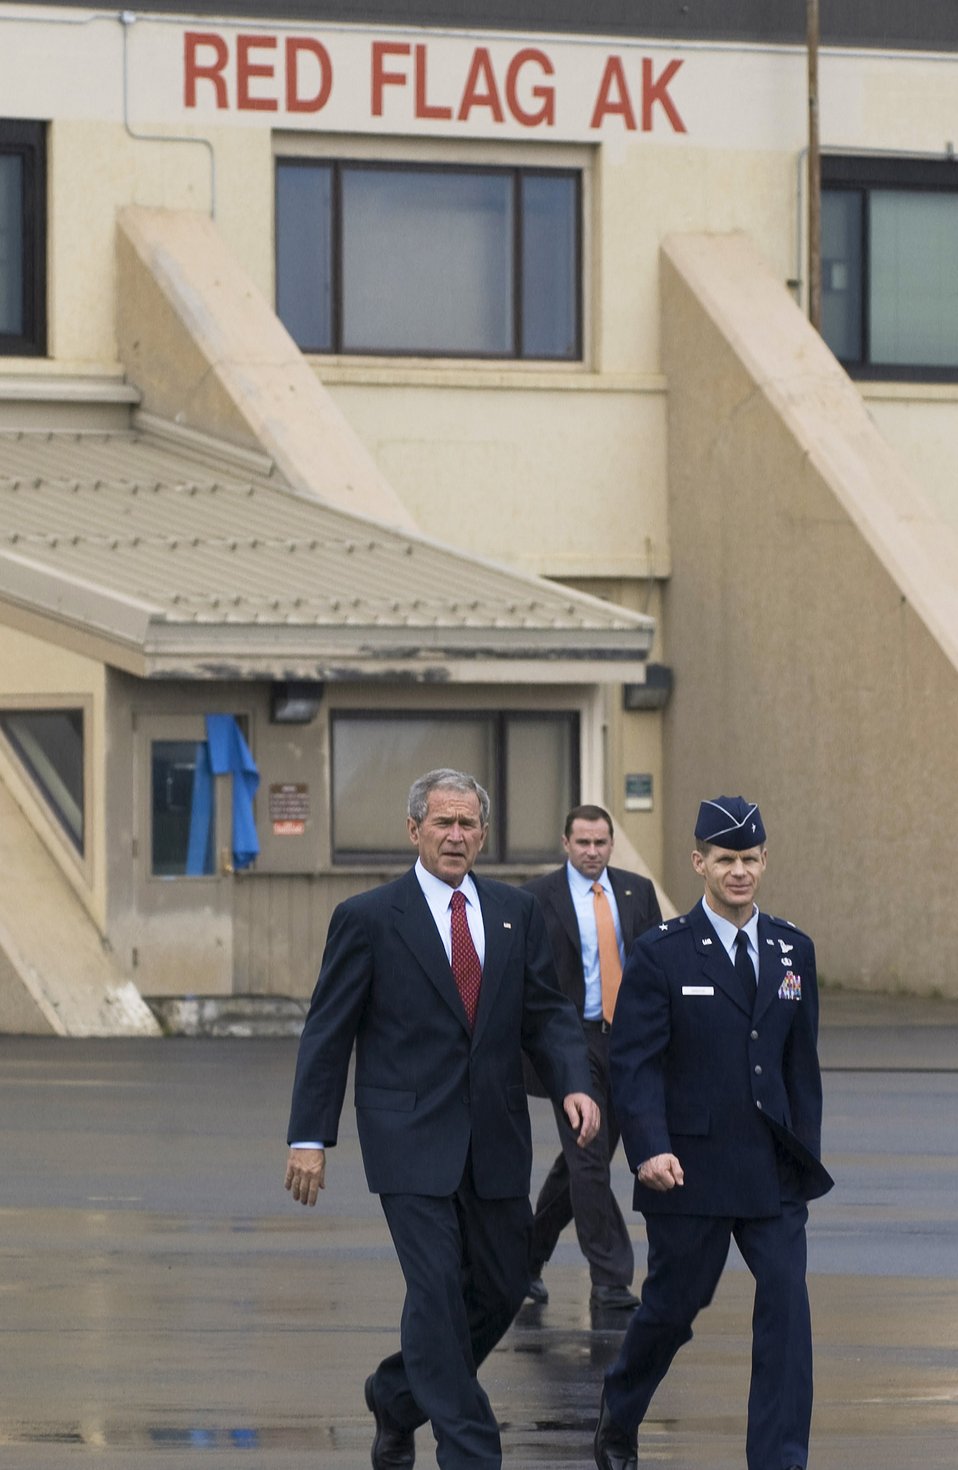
President visits Eielson

President George W. Bush is escorted by Brig. Gen. Mark W. Graper to Air Force One Aug. 4 at Eielson Air Force Base, Alaska. The president talked to a crowd of more than 2,000 military members. General Graper is the 354th Fighter Wing commander.